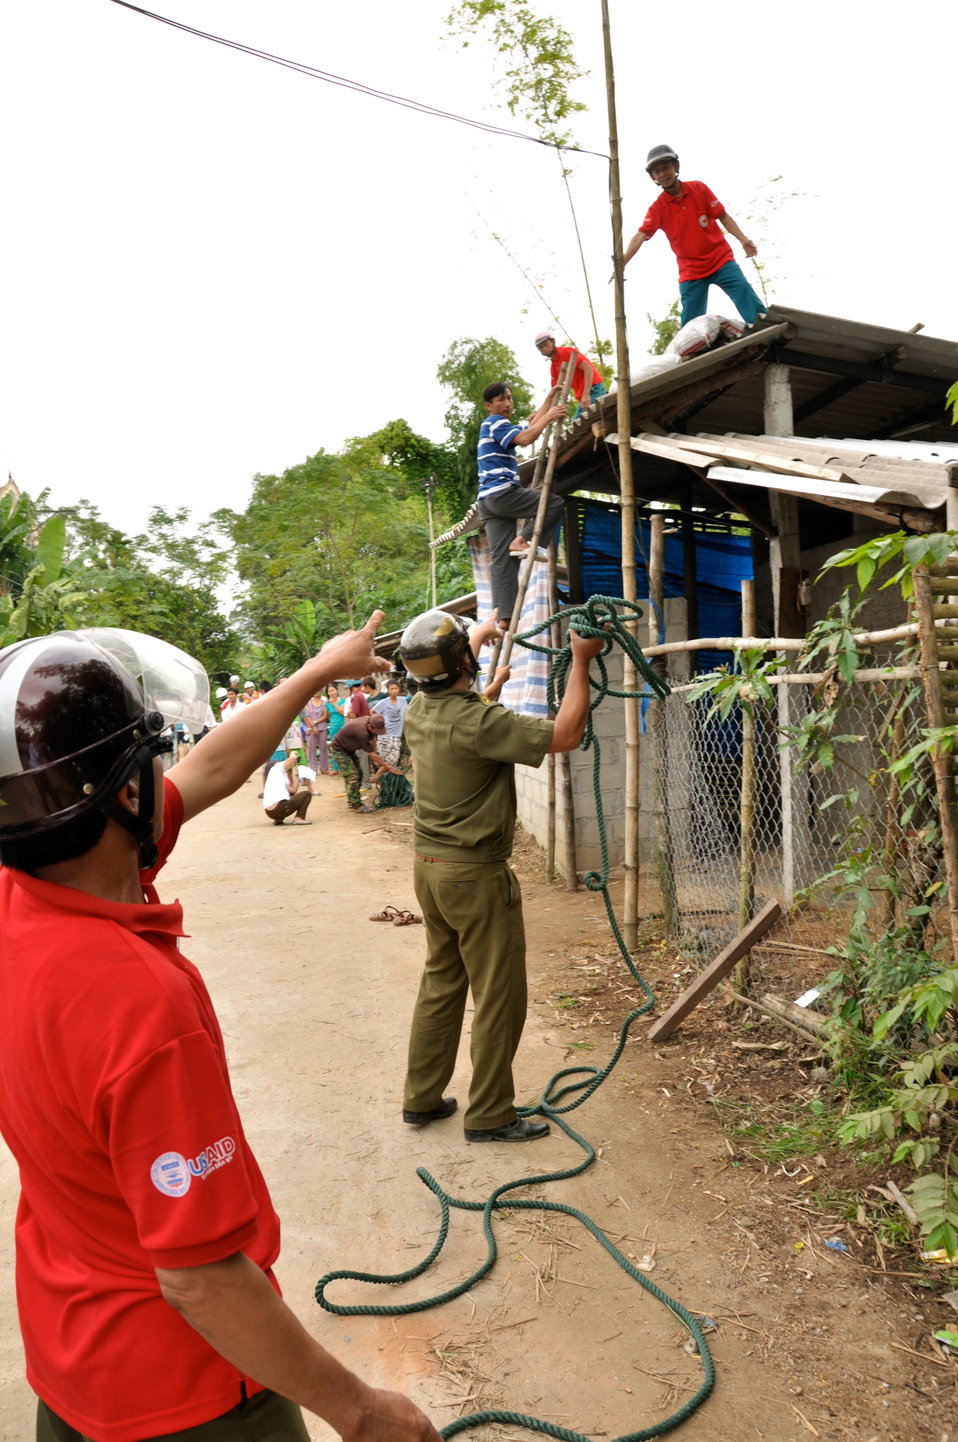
USAID and Save the Children support community evacuation drill and emergency preparedness in central Vietnam

Loc An Commune, Phu Loc District, Thua Thien Hue Province
December 4, 2012, Photo: Richard Nyberg, @USAIDVietnam